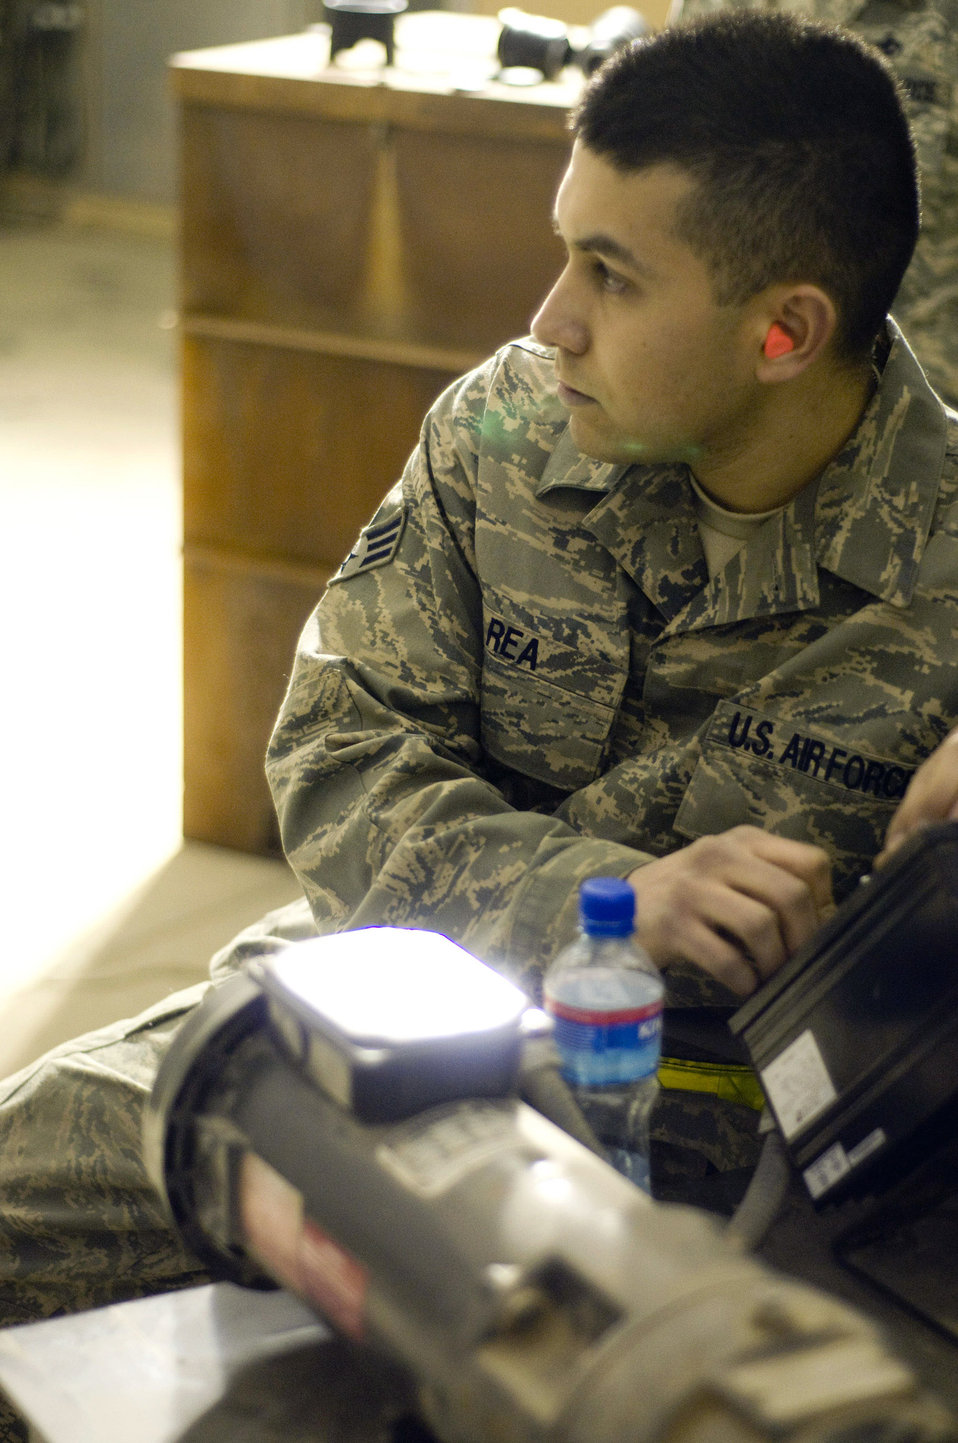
Feeding the Thunderbolt II

Senior Airman Juan Rea operates the controls of a GFU-7